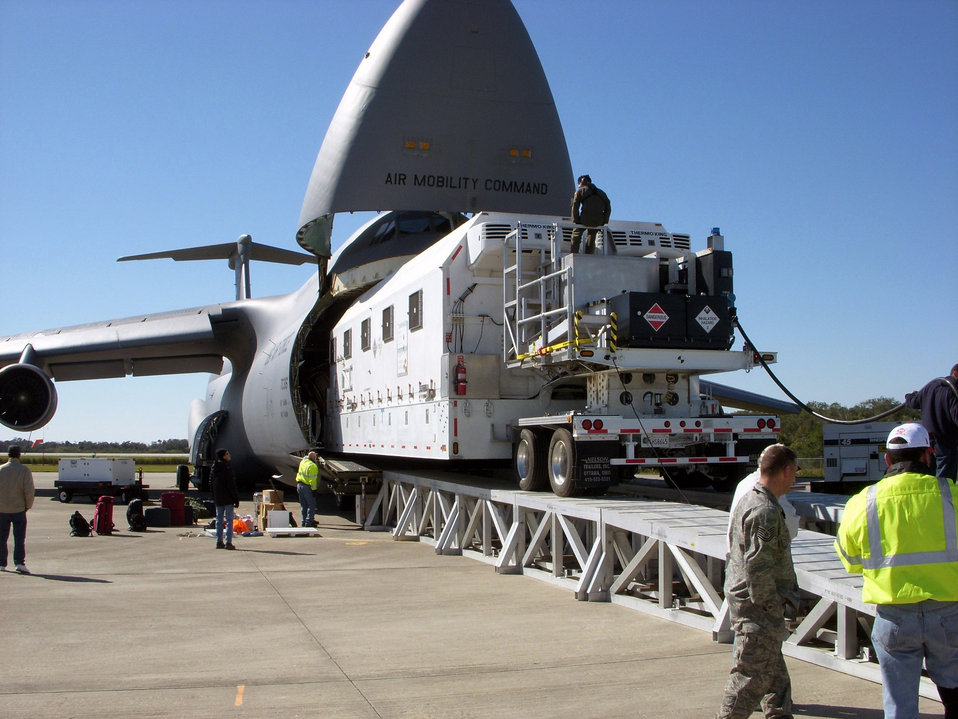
$350 million spacecraft -- unload carefully

Aircrews from Travis Air Force Base, Calif., and Boeing employees offload the Wideband Global SATCOM spacecraft from a C-5 Galaxy Jan. 21 at Cape Canaveral Air Force Station, Fla. The equipment is part of the Atlas 5 rocket mission set to launch March 9.